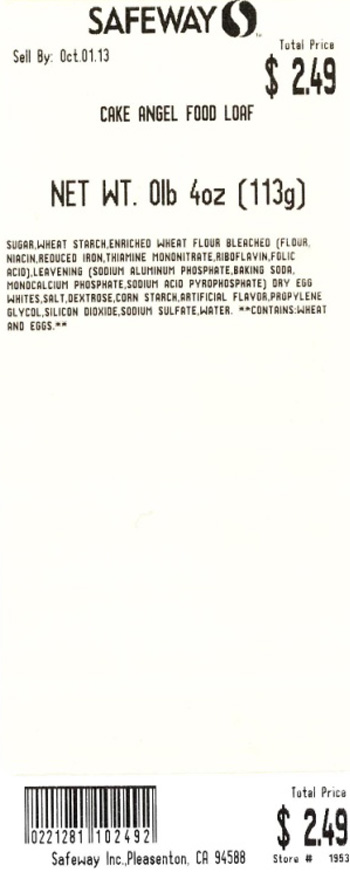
RECALLED – Angel Food Cakes

September 26, 2013 – Product Recall – Safeway Recalls Several Varieties of Angel Food Cake Due to Undeclared Soy and Milk Allergens.